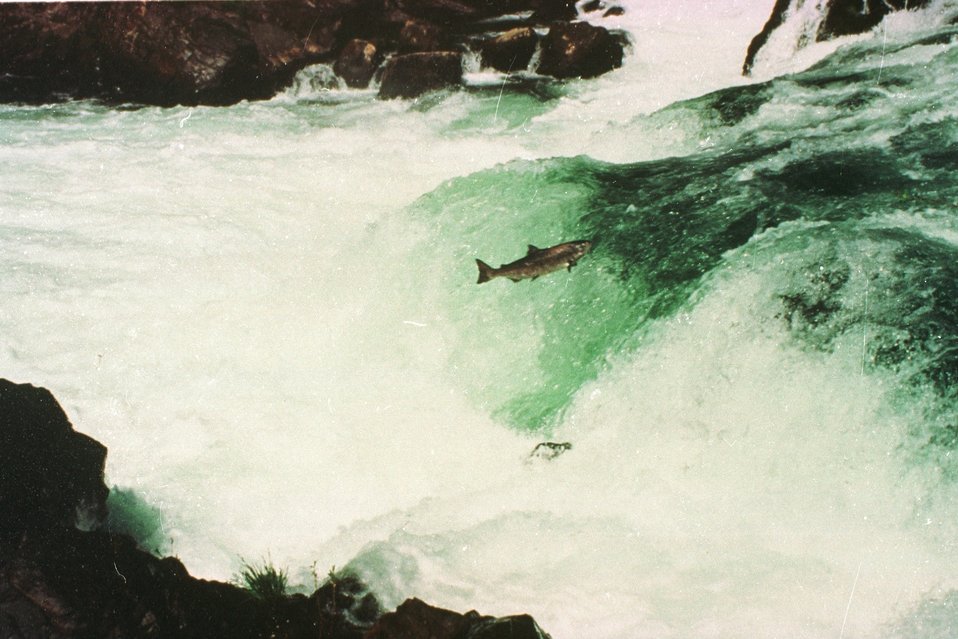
Fish jumping up falls.